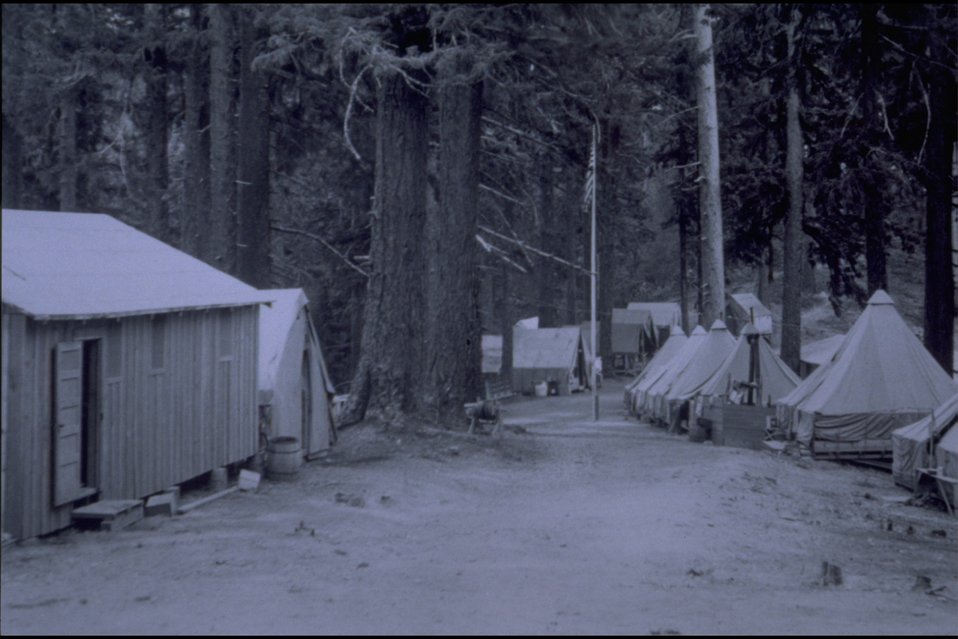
Near Rogue River - Mt. Ruben CCC Camp, used before Camp Rand was established.